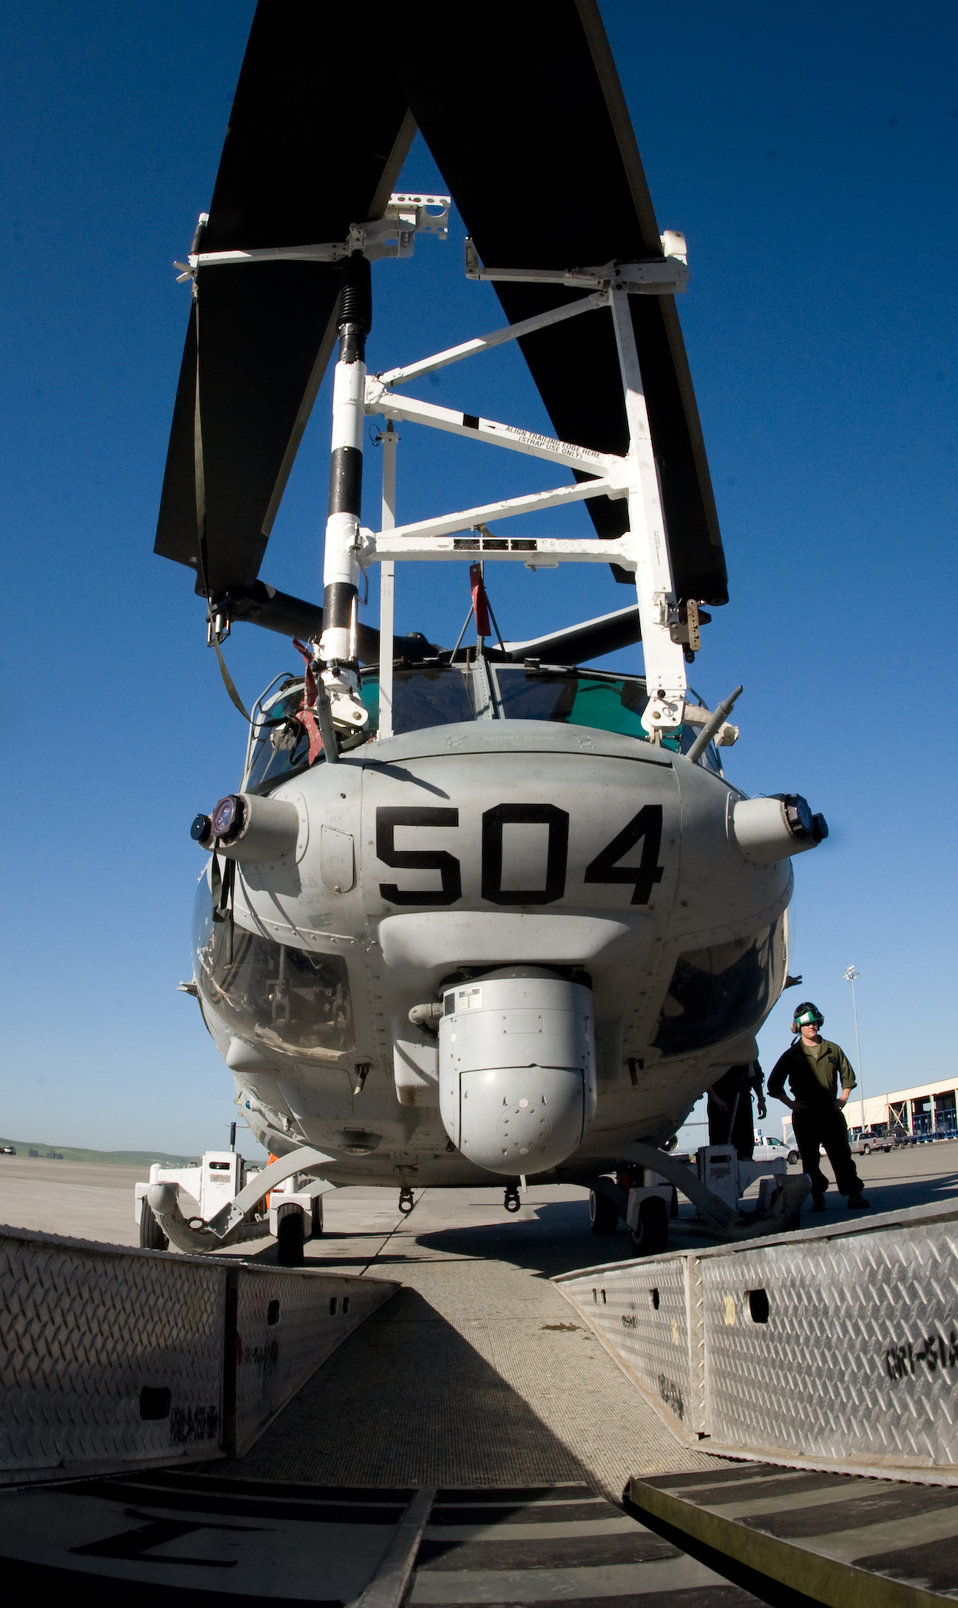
C-5 - helicopter load exercise

A Marine UH-1Y helicopter is ready and configured to be test-loaded into a C-5C Galaxy. Airmen from Travis Air Force Base, Calif., and Marines from Camp Pendleton, Calif., came together at Travis AFB April 20 to determine how the helicopter best fit into the cargo bay of the C-5 and how many could be loaded at one time. The goal is to get helicopters into the area of responsibility faster and ultimately into the fight.